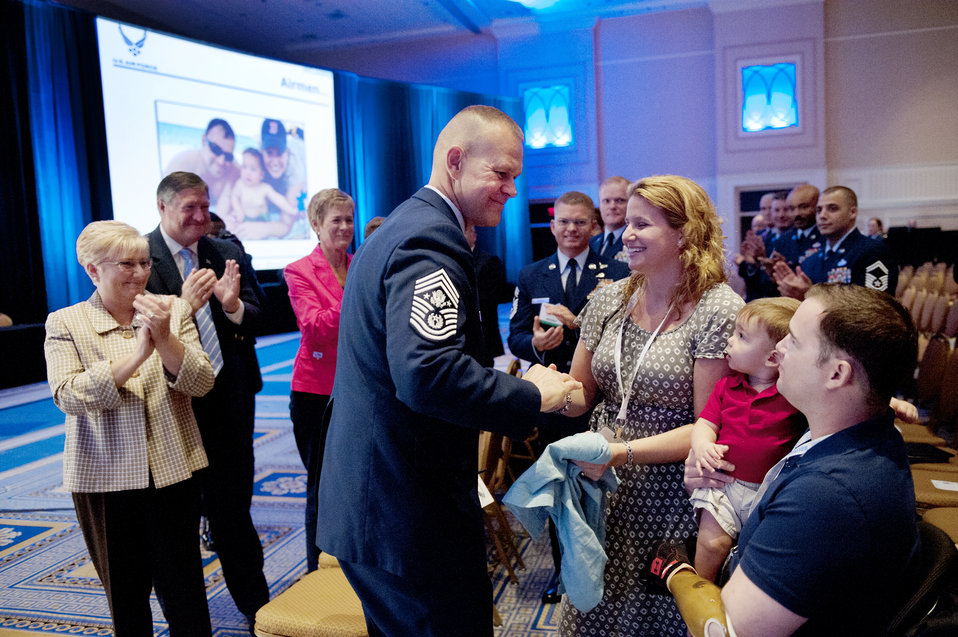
Chief Master Sgt. of the Air Force James A. Roy, center, greets Tech. Sgt. Joe Deslauriers, right, his son, Cameron, and wife, Lisa, during the enlisted call of the Air Force Association's Air and Space Conference and Technology Exposition in Washington, Sept. 19, 2012. Deslauriers, who is an explosives ordnance technician assigned to the 1st Special Operations Civil Engineer Squadron, Hurlburt, Fla., lost both legs in Afghanistan last year. To the left is Paula Roy; wife of CMSAF Roy; Secretary of the Air Force Michael B. Donley and his wife, Gail.